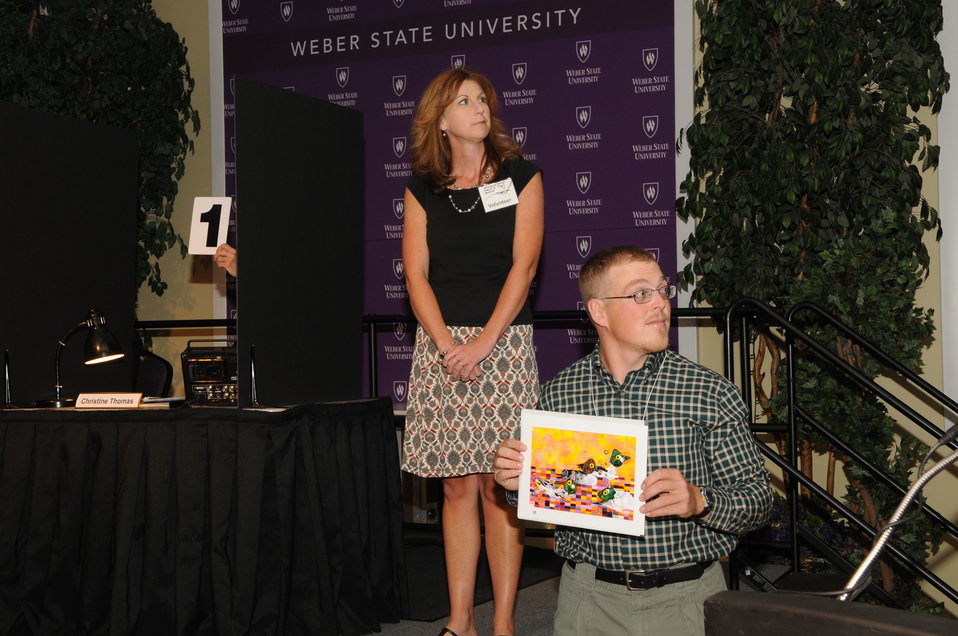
Artwork Presentation

The U.S. Fish & Wildlife Service sponsored the 2012 Federal Duck Stamp Art Contest September 28 and 29 in Ogden, Utah, at Weber State University. A panel of five judges was responsible for choosing the art work used to design the 2013-2014 Migratory Bird Hunting and Conservation Stamp.